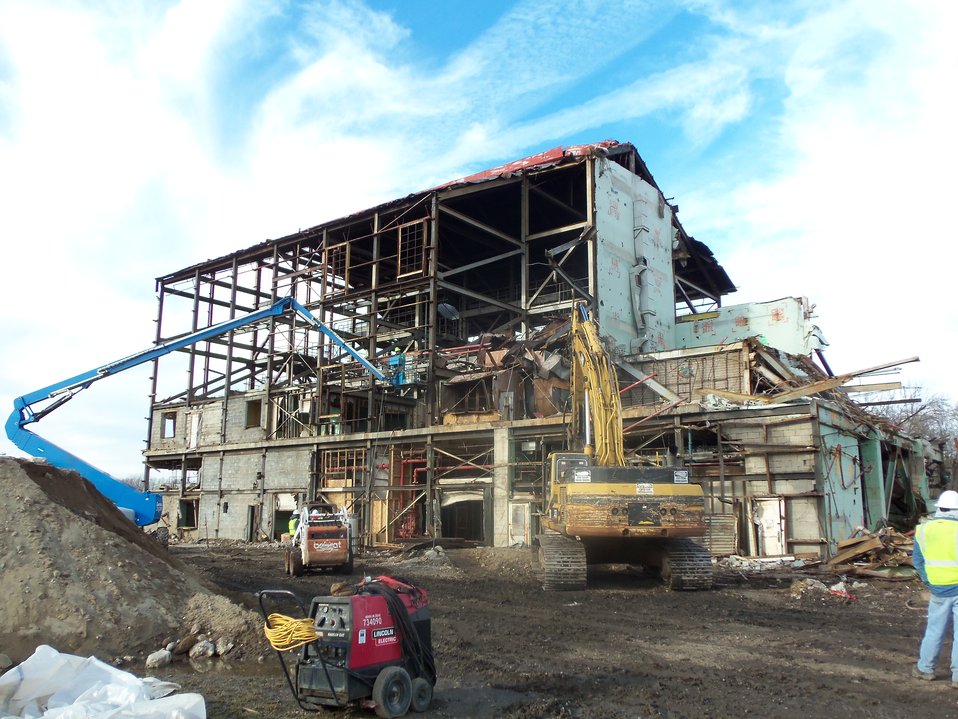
BLDG 401 SHELL DECONSTRUCTION

Activities from the Niagara Falls Storage Site, which is associated with the former Lake Ontario Ordnance Works. Formerly Utilized Sites Remedial Action Program (FUSRAP), a program initiated in 1974 to identify, investigate and clean up or control sites that were part of the Nation's early atomic energy and weapons program. Activities at the sites that are eligible for FUSRAP were conducted by Manhattan Engineer District (MED) or the Atomic Energy Commission (AEC), both predecessors of the Department of Energy (DOE). The U.S. Army Corps of Engineers was assigned management of FUSRAP by Congress in 1997.